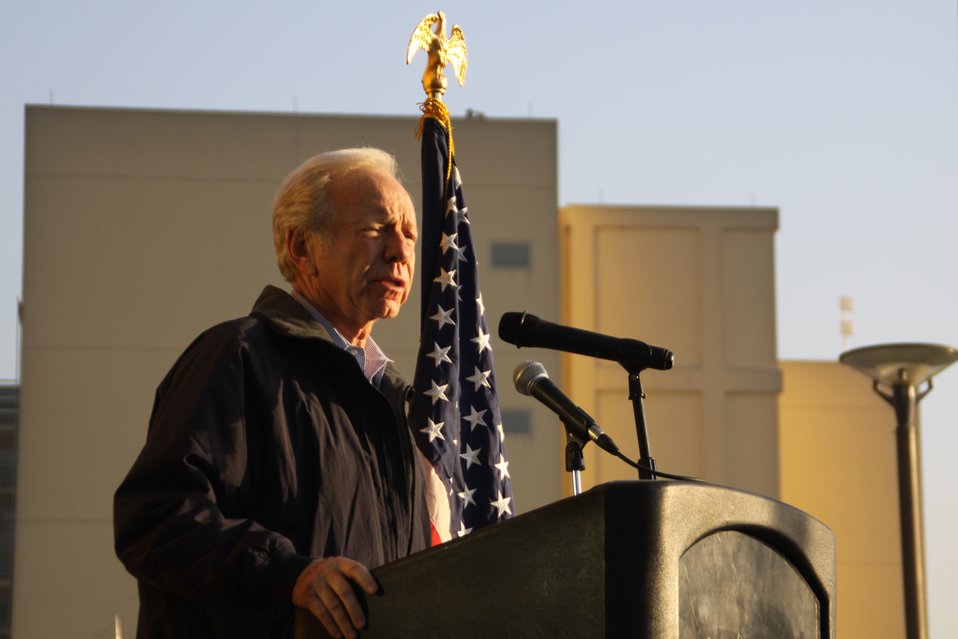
Senator Lieberman